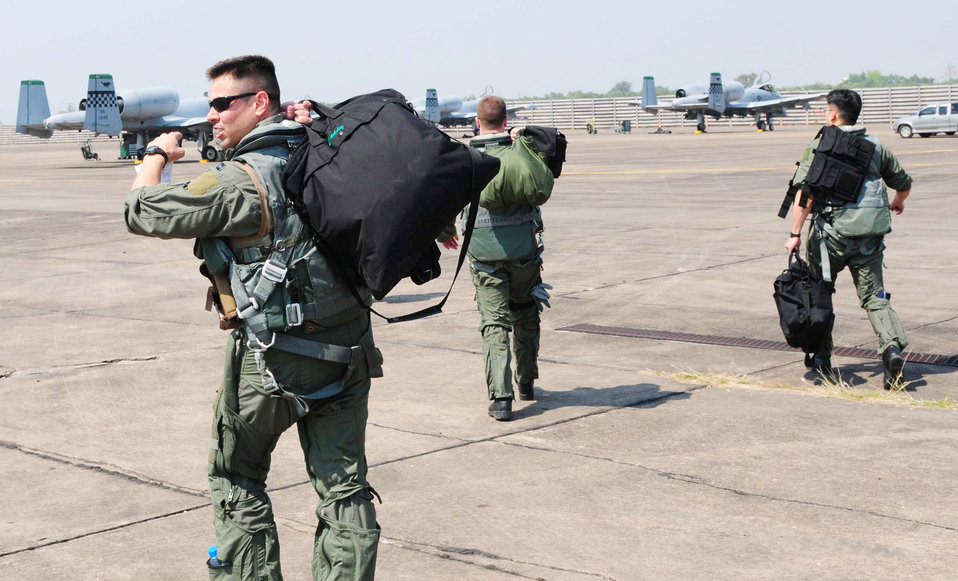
Airmen take flight at Cope Tiger

Airmen walk to their aircraft at Udon Thani Royal Thai Air Force Base, Thailand, March 4, 2010, before conducting the first of several planned missions as part of Cope Tiger 2010. The Airmen are participating in the annual, multilateral field training exercise involving the U.S. Air Force, Royal Thai Air Force and Army, and the Republic of Singapore Air Force March 1-12. The Airmen are from the 25th Fighter Squadron at Osan Air Base, South Korea.